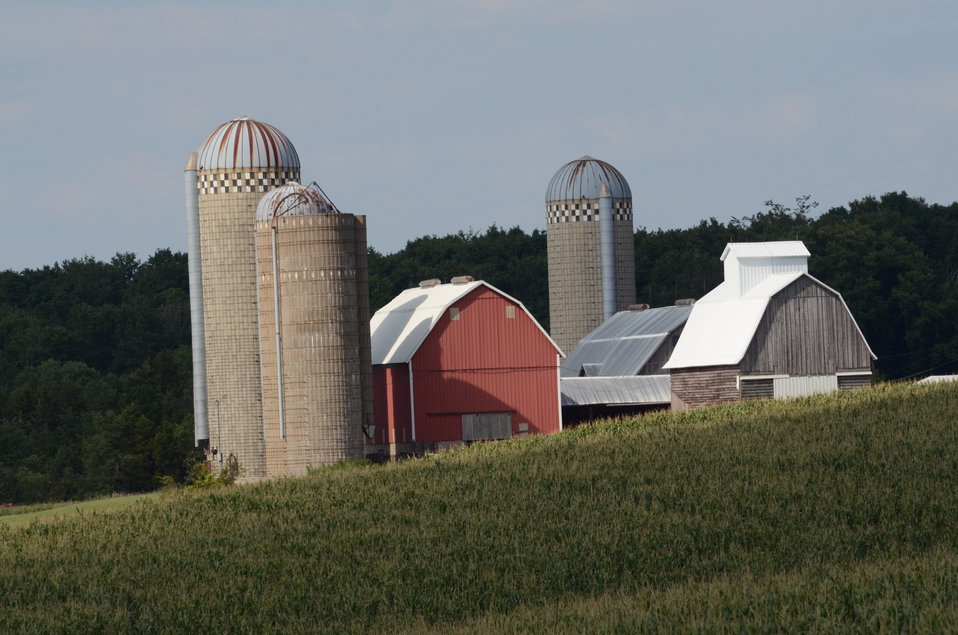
Dairy Farm near Poesta, IA, on Tuesday, Aug. 16, 2011.